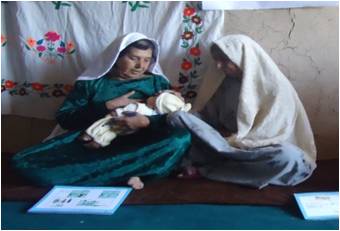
Saving Newborns in Rural Afghanistan

Miriam in Bamyan Province has three children – two other infants died within days of birth. She has just given birth to her sixth child. However, this birth was different from the previous ones. Miriam and her female relatives have learned from the local female community health worker (CHW) about the importance of keeping the baby warm.

The old custom of bathing a newborn soon after birth is dangerous because the baby could easily become cold and get sick. Instead, the baby should be gently dried with a towel and placed next to the mother’s skin. Washing a baby can and should wait until later. The CHW said, “Until I received training about the care of newborn babies, I followed our old customs. I did not realize how important it is to keep the baby warm after it is born. Placing the newborn on the mother’s skin is so simple, and the mothers like it, too.”

With nearly nine out of 10 births in Afghanistan still occurring in the home, USAID’s Basic Support for Institutionalizing Child Survival (BASICS) project is working with NGOs to train CHWs in essential maternal and newborn care so they can teach pregnant mothers and their families the simple but important things they can do to preserve the lives of newborns. CHWs learn the importance of ensuring that the baby is breathing immediately after it is born, promoting good care of the umbilical cord by cutting it with a clean instrument at the proper distance from the baby’s abdomen, starting exclusive breastfeeding for the baby immediately after birth, and as mentioned, keeping the baby warm by placing it on the mother.

Afghanistan’s Ministry of Public Health and USAID are seeking to help save the lives of babies born in rural homes by ensuring that CHWs know the key newborn care lessons to share with pregnant mothers and their families. Families can now be more confident and better prepared for their babies’ births. Through efforts in many small villages and communities, CHWs seek to reduce the unnecessary newborn deaths that occur throughout the country.